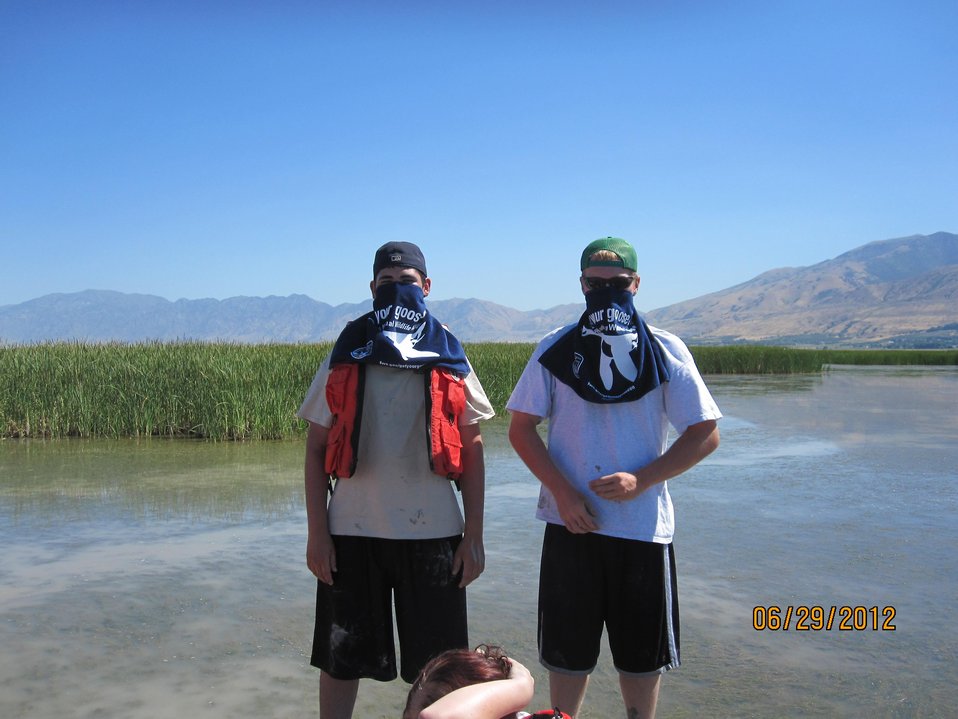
Get Your Goose On!

Pictured here are Youth Conservation Corps (YCC) folks at Bear River Migratory Bird Refuge.

These young men are participating in a boundary posting project and 'getting their goose on' in the water!